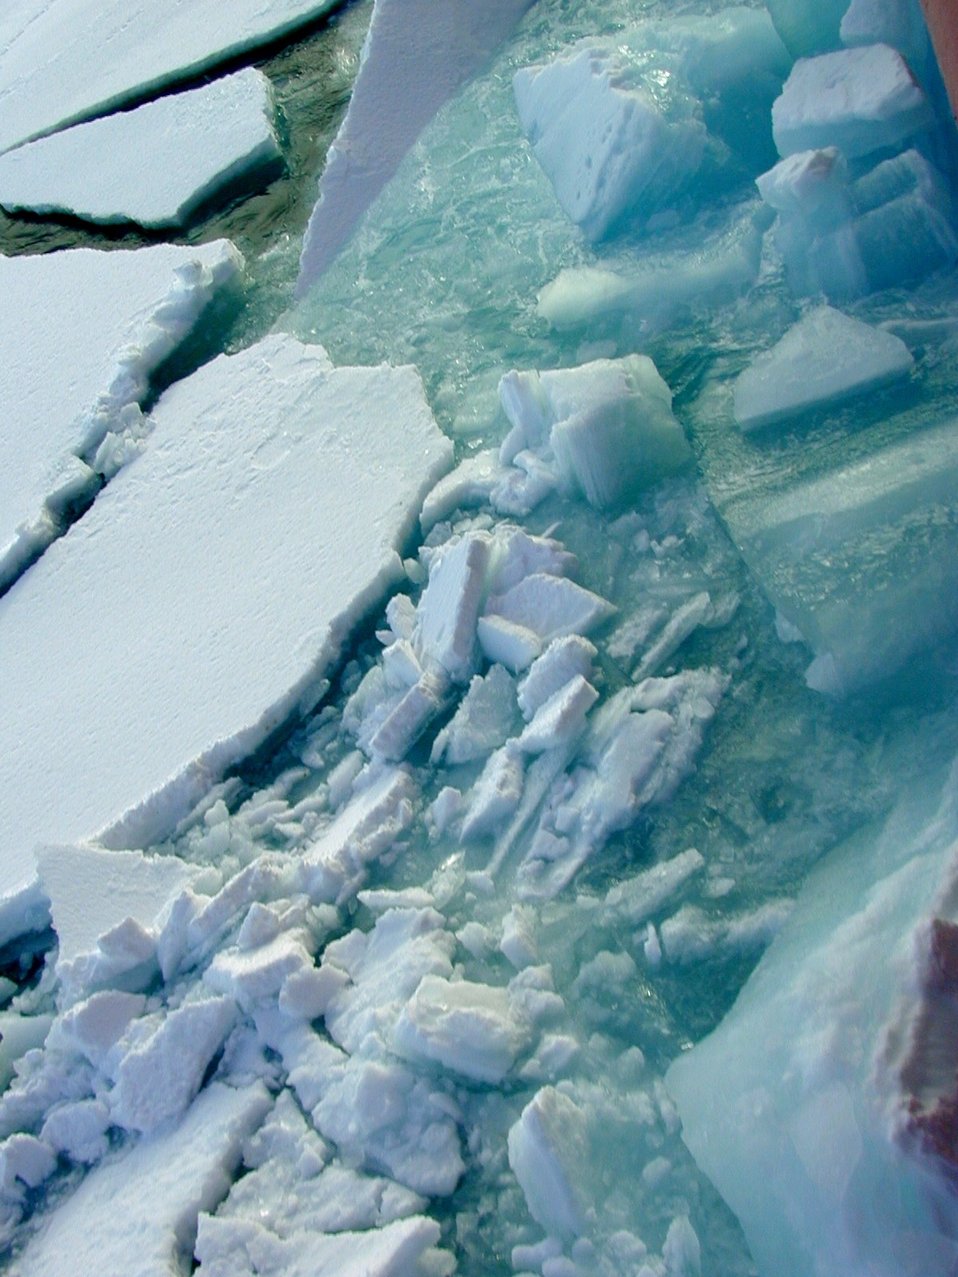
Broken Arctic sea ice in the wake of the US Coast Guard ice breaker HEALY during scientific studies in the Chukchi Sea.